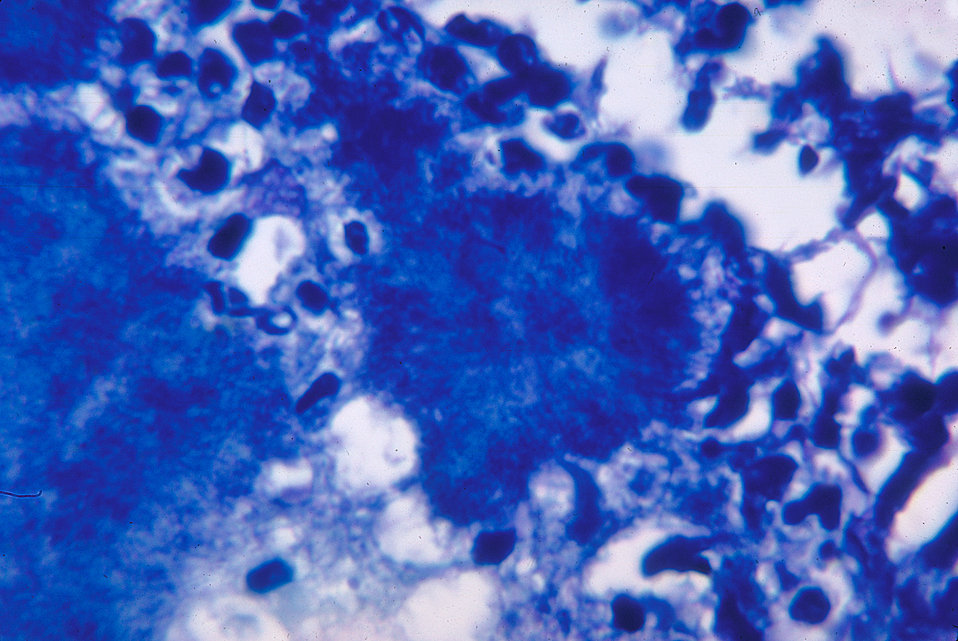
This micrograph depicts histopathologic changes due to the gram-positive organism, Actinomyces israelii.